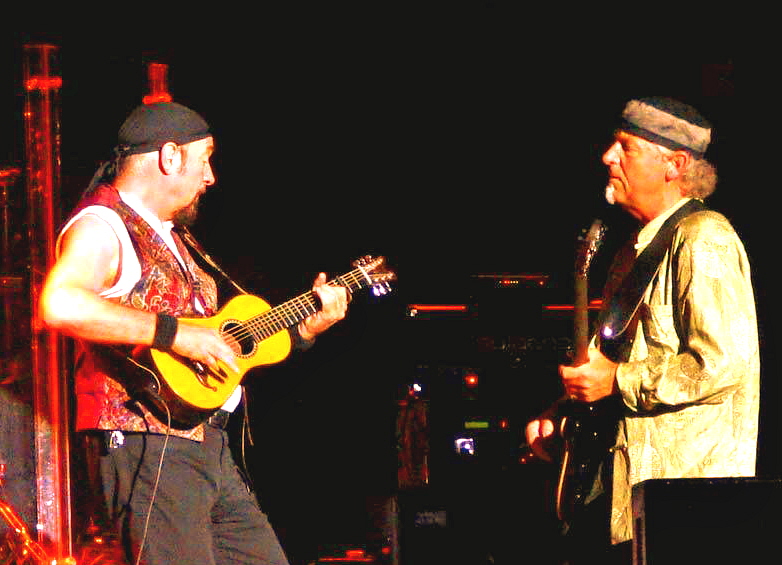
Gemaakt op 5 mei in het Teatro Nazionale, Milaan, Italië.